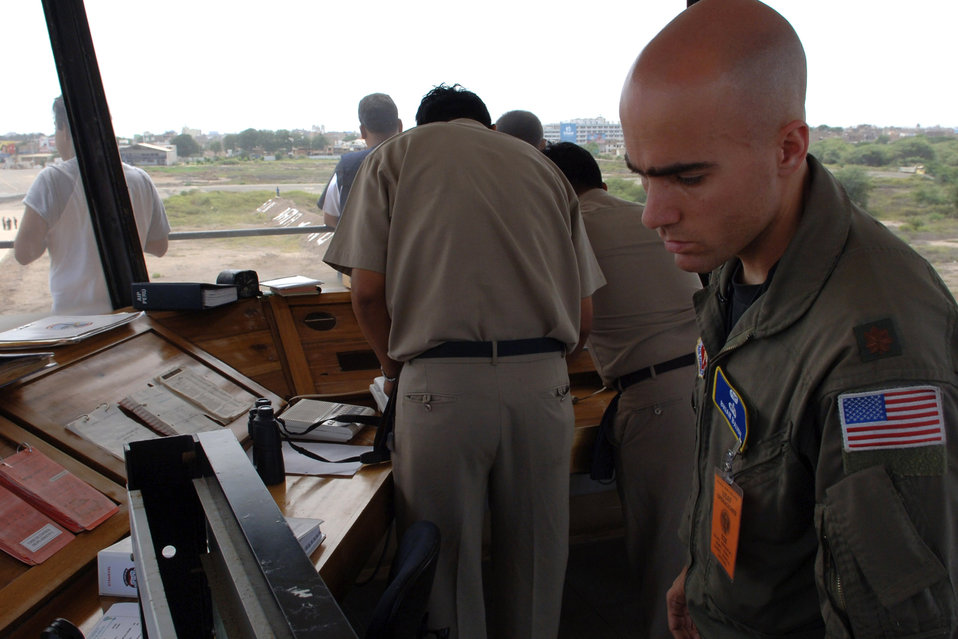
Skills from past career field come into play during exercise

Maj. Brian Baude monitors aircraft arrival and departure with Peruvian air force air traffic controllers during Exercise Falcon and Condor 2007 Feb. 14 in Chiclayo, Peru. The a joint military exercise provides the U.S military the opportunity to work together and build relationships with military and civilian leaders of Peru. Major Baude is a combat airspace manager assigned to 12th Air Force and Air Forces Southern.